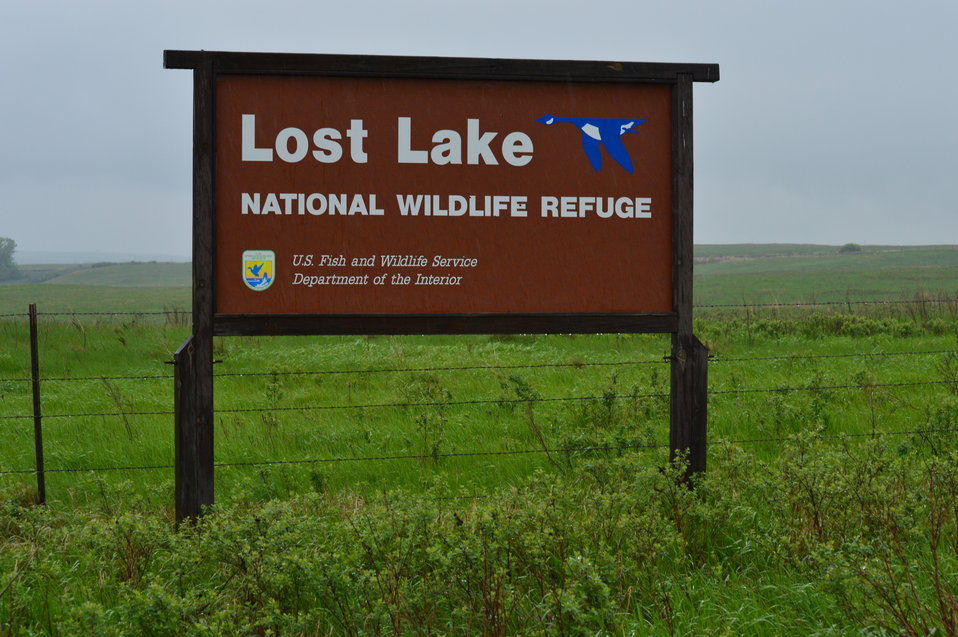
Lost Lake NWR sign

Scenery and wildlife at Lost Lake National Wildlife Refuge in North Dakota.